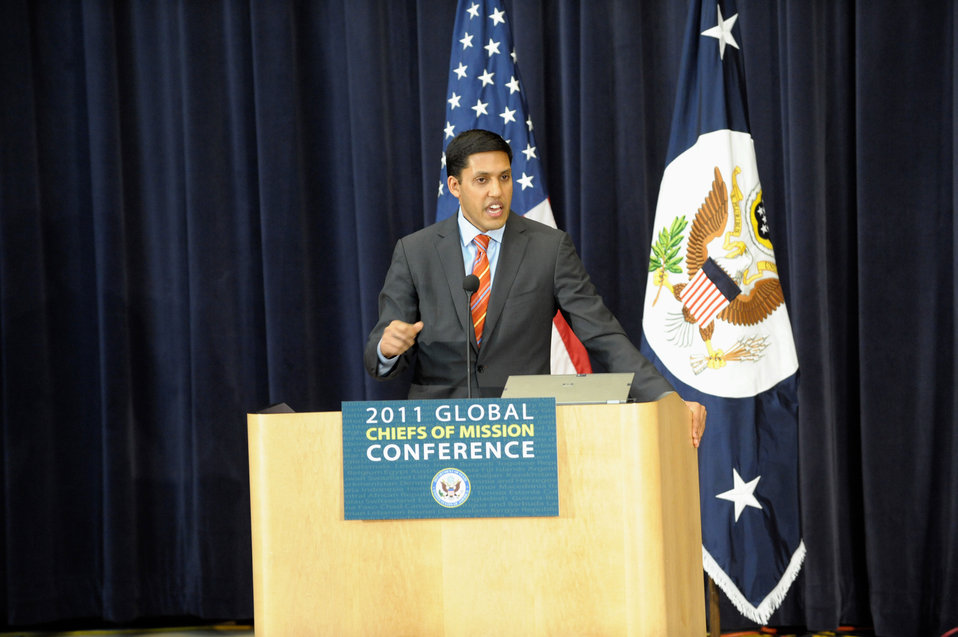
USAID Administrator Shah Delivers Remarks

USAID Administrator Rajiv Shah delivers remarks at the 2011 Global Chiefs of Mission Conference at the U.S. Department of State in Washington, D.C., on February 2, 2011.